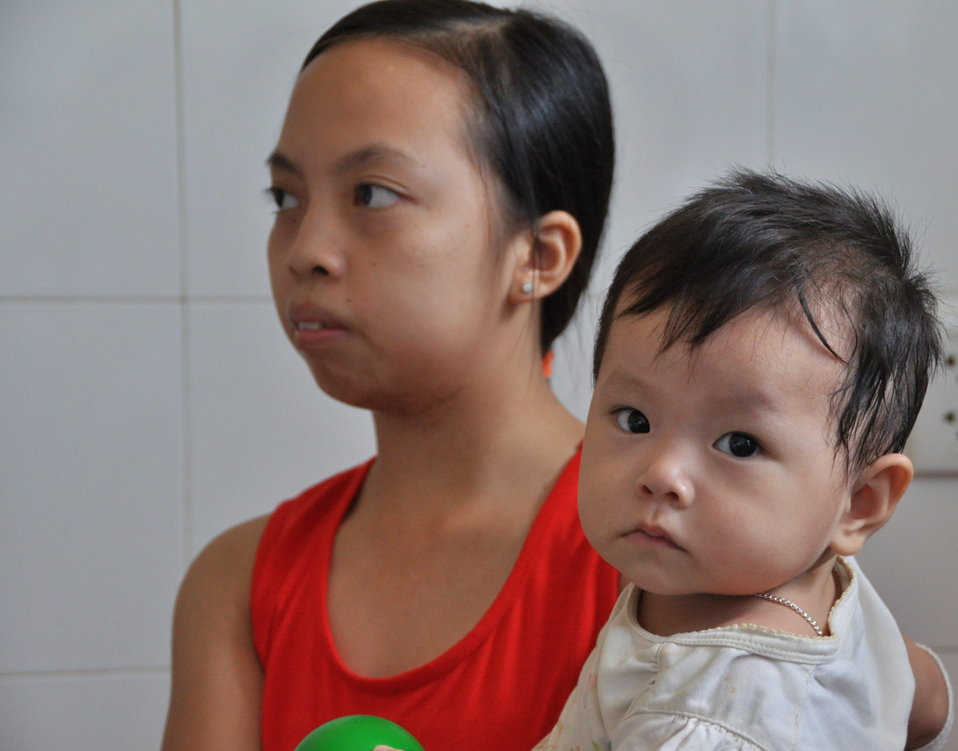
USAID and Partners Join to Open Rehabilitation Department at Women's and Children's Hospital of Danang

July 16, 2013